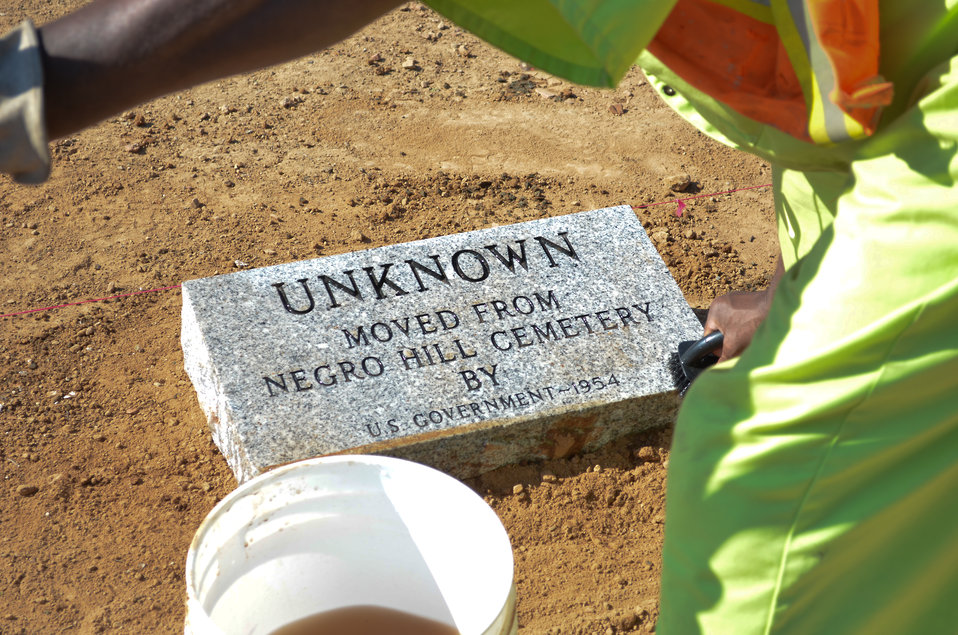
Replacing offensive grave markers at Mormon Island Relocation Cemetery

Folsom Prison inmates working under the California Prison Industry Authority place new grave markers at Mormon Island Relocation Cemetery in El Dorado Hills, Calif., Oct. 19, 2011, replacing original markers that contained an offensive racial epithet. The U.S. Army Corps of Engineers Sacramento District moved the 36 graves from the original Negro Hill Cemetery to the relocation cemetery during the construction of Folsom Dam in 1954, and created the offensive markers. El Dorado County, which manages the cemetery, and the California Prison Industry Authority collaborated on the project to replace the markers.